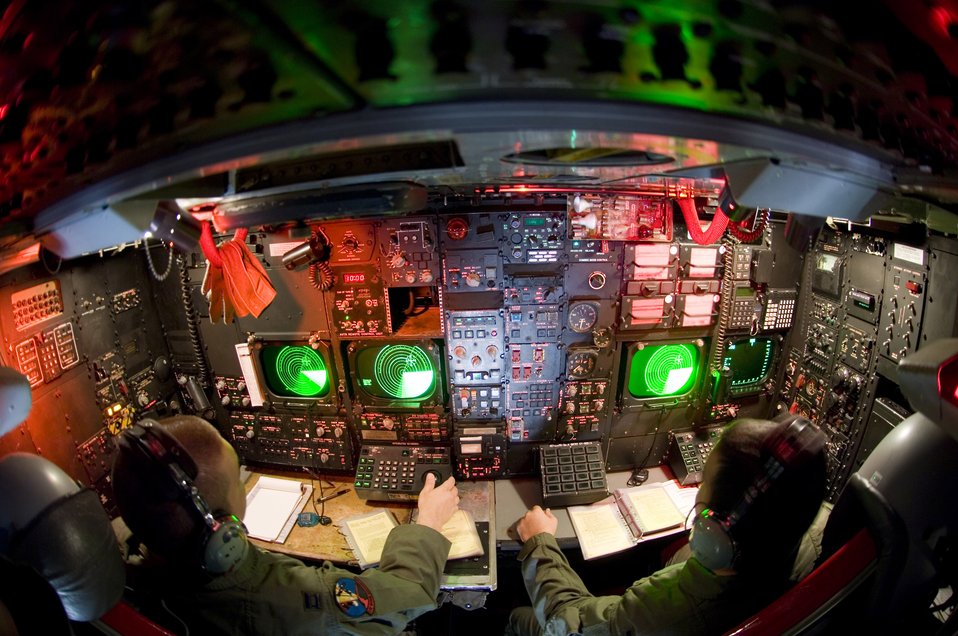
B-52 operations

Capt. Jeff Rogers (left) and 1st Lt. Patrick Applegate are ready in the lower deck of a B-52 Stratofortress at Minot Air Force Base, N.D., on Aug. 21. The officers are with the 5th Bomb Wing at Minot AFB.